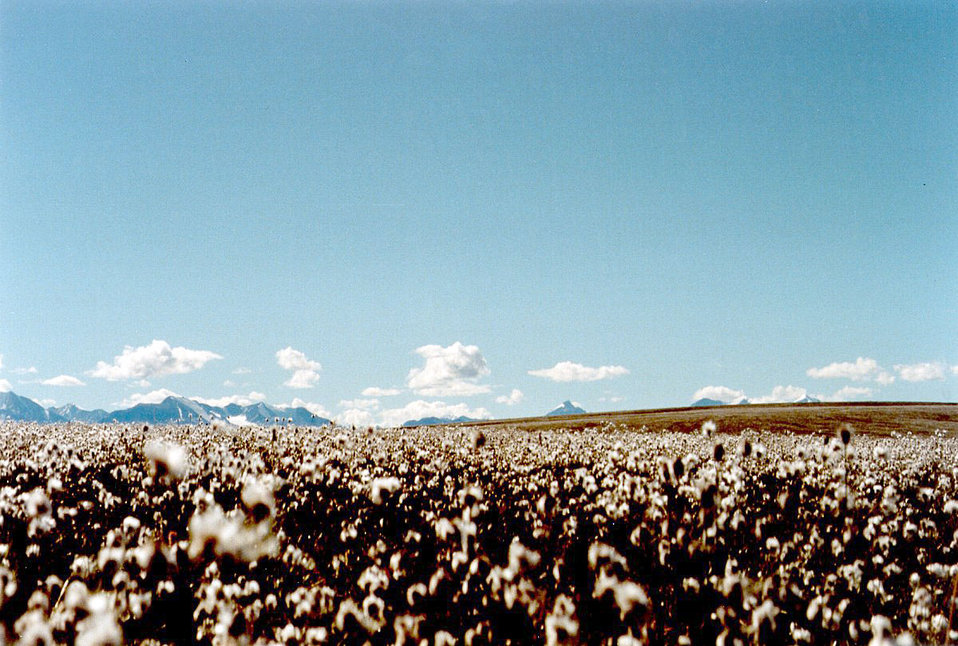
1002 Area: cottongrass in bloom

Cottongrass (Eriophorum) in bloom on the 1002 Area of the Arctic National Wildlife Refuge coastal plain.